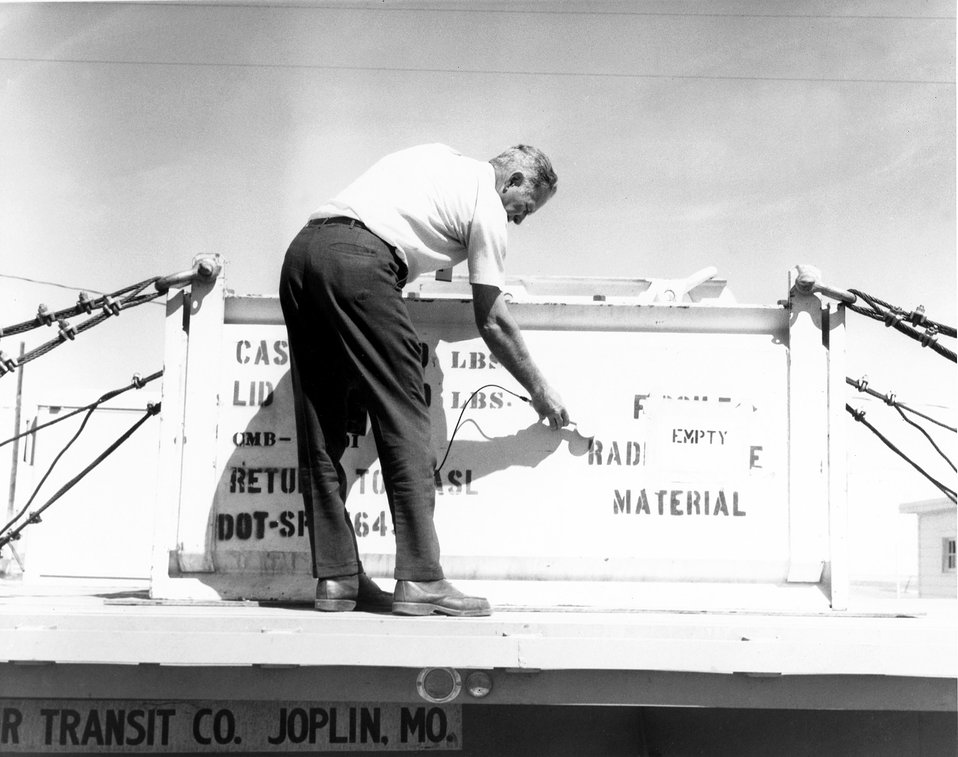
A health physicist monitors an empty shipping container used to transport radioactive materials at the AEC's National Reactor Testing Station in Idaho.